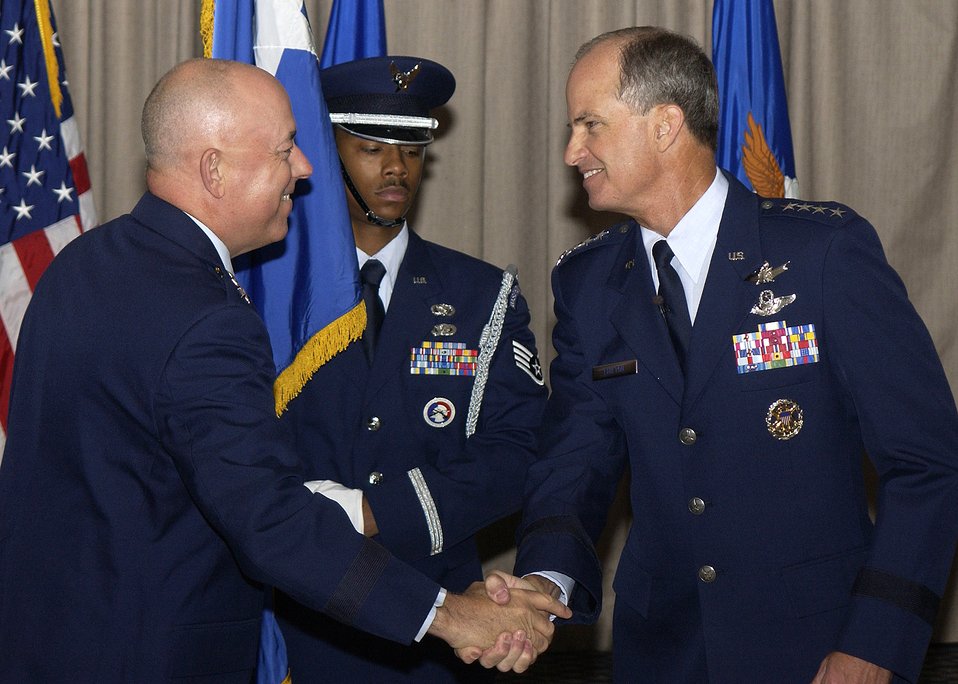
Former astronaut takes command of Air Force Space Command

Air Force Chief of Staff Gen. T. Michael Moseley congratulates Gen. Kevin P. Chilton, commander of Air Force Space Command, on receiving his fourth star at a ceremony Monday, June 26.